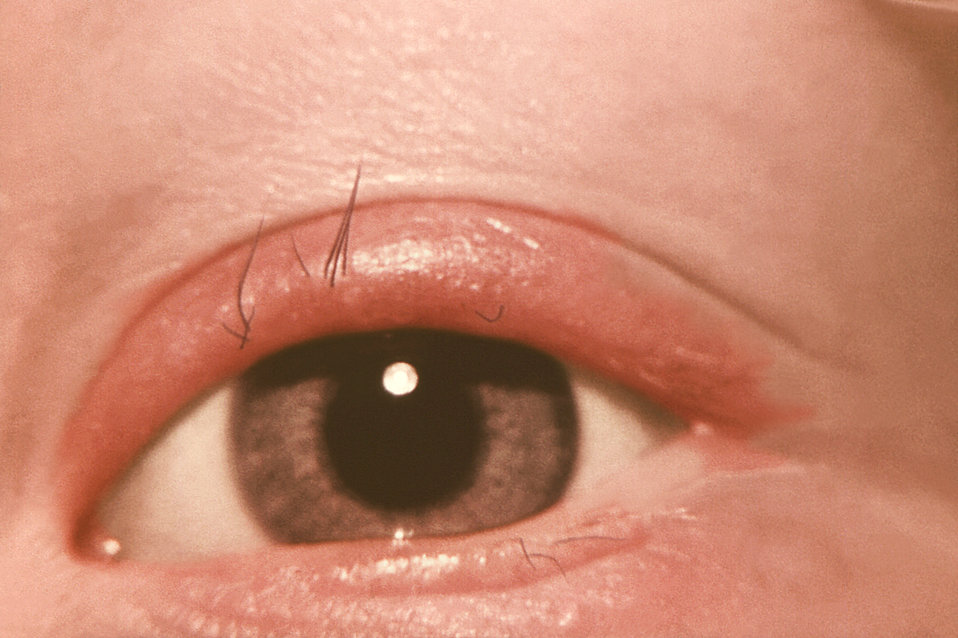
Close-up of a boy's eye

This image depicts the effects of an accidental vaccinial inoculation of a two year-old boy's left eye. In this particular instance, this boy's mother had been vaccinated 12 days before his ocular vaccinia became apparent.